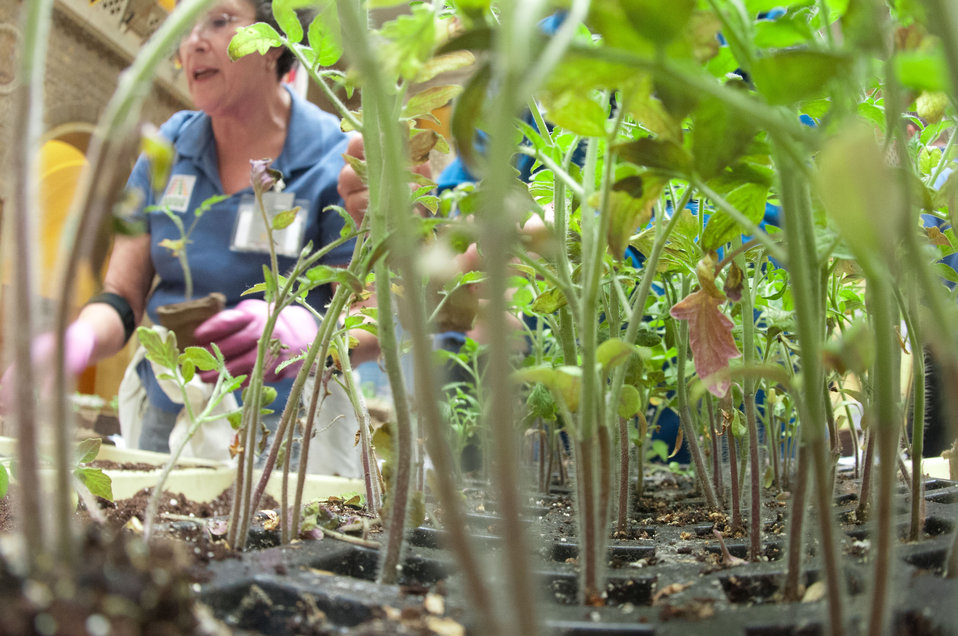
U.S. Department of Agriculture (USDA) National Organic Program, Agricultural Marketing Specialist Lee Cliburn prepares seedling for the People’s Garden Initiative and volunteer Executive Master Gardeners distribution of ‘Abraham Lincoln” Tomato seedlings that the People’s Garden Initiative is distributing to USDA employees in celebration of the 150th Anniversary of the U.S. Department of Agriculture, on Tuesday, May 15, 2012 in Washington, D.C., on this day, 150 years ago, President Abraham signed the Department into existence during the Civil War. In 1923 the H.W. Buckbee seed company of Rockford, Illinois introduced an heirloom variety named in honor of Illinois’ Greatest Son – Abraham Lincoln. The plant produces large beefsteak tomatoes in about 90 days. Volunteer Executive Master Gardeners planted and cultivated more that 3,000 seedlings ranging in size from one inch to more than a foot tall, so people could choose the best ones to transport home and to stagger the harvest by selecting a small and large seedling. One of the hopes of this event is to share the joys of gardening and harvesting, as well as the opportunity to share your harvest in your community. Seed packets are being distributed to People’s Gardens worldwide.